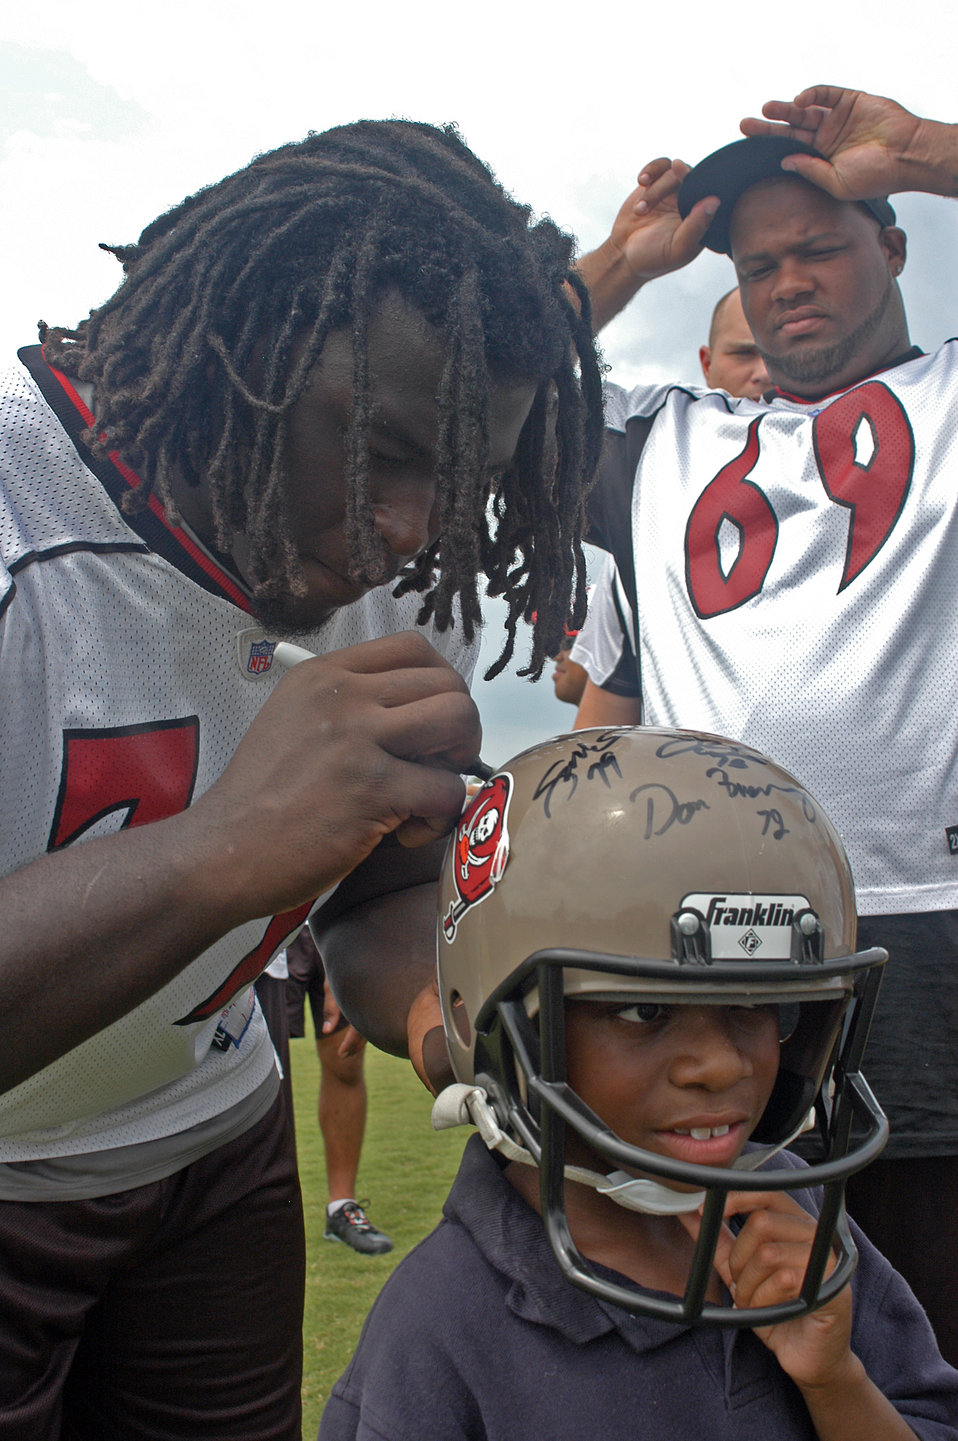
Tampa Bay plays at MacDill

Davin Joseph, Tampa Bay Buccaneers guard, signs a helmet for 7-year-old James Lyons during the pre-game, walkthrough practice held at MacDill Air Force Base, Fla., on Aug. 18. The practice was closed to the general public but open to base personnel. Airmen who attended the practice were able to get an up-close look at the 2006 Buccaneers team.